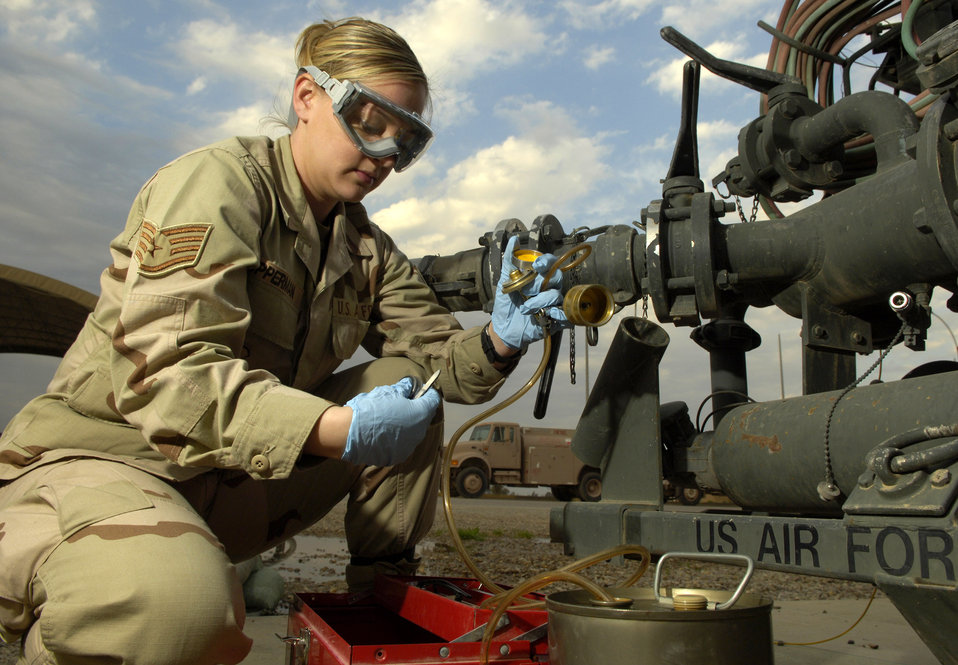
Maintaining strict quality

Staff Sgt. Kara Opperman performs a quality control check Feb. 13 on fuel coming out of a fill stand at Balad Air Base, Iraq. Sergeant Opperman ensures the fuel is safe and meets Air Force specifications before it is used for aircraft and equipment.